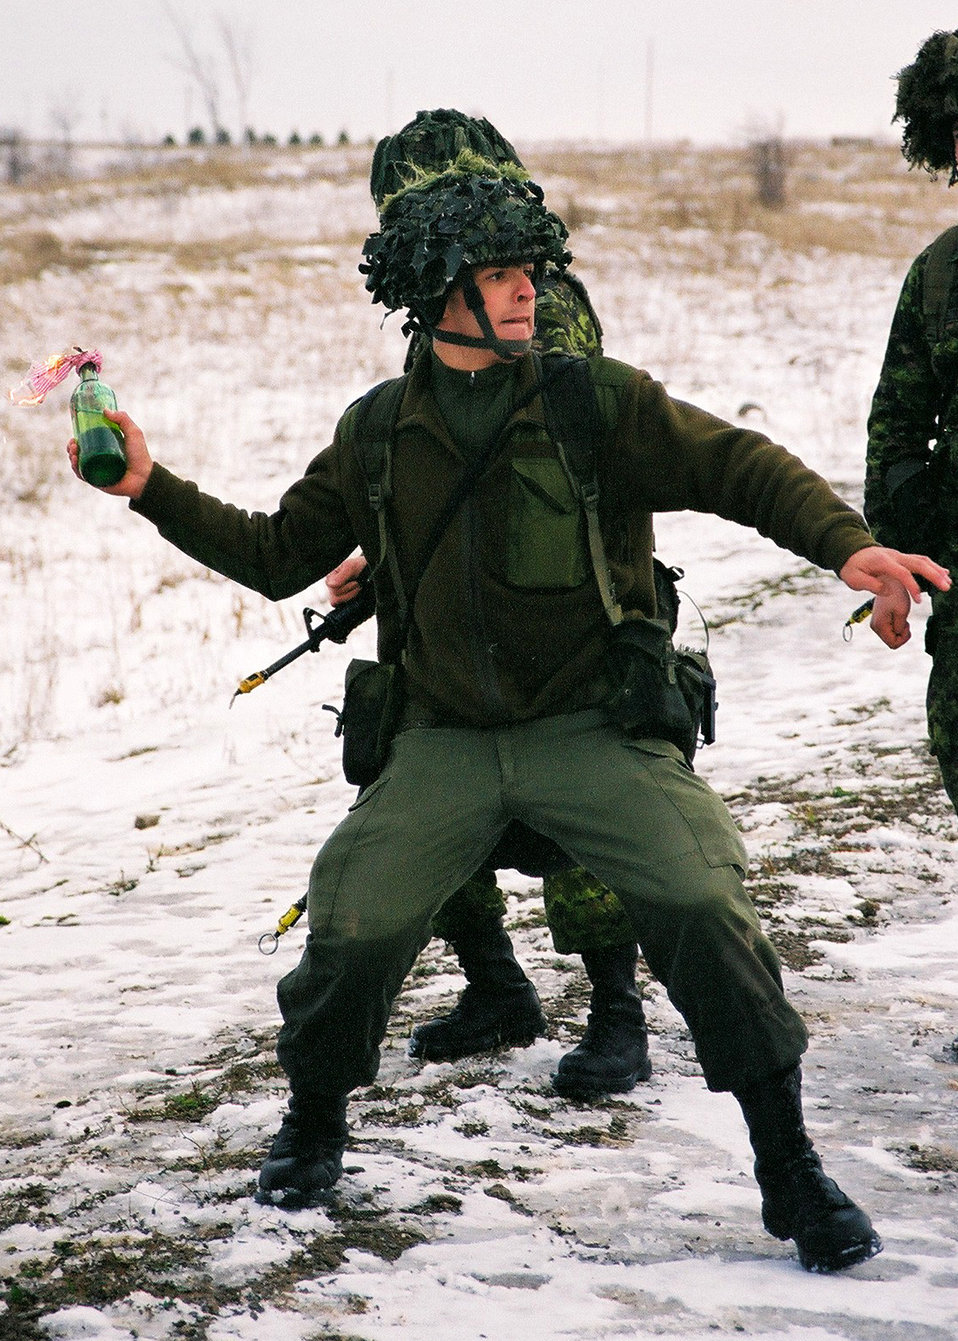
Canadian Forces soldier throwing Molotov cocktail